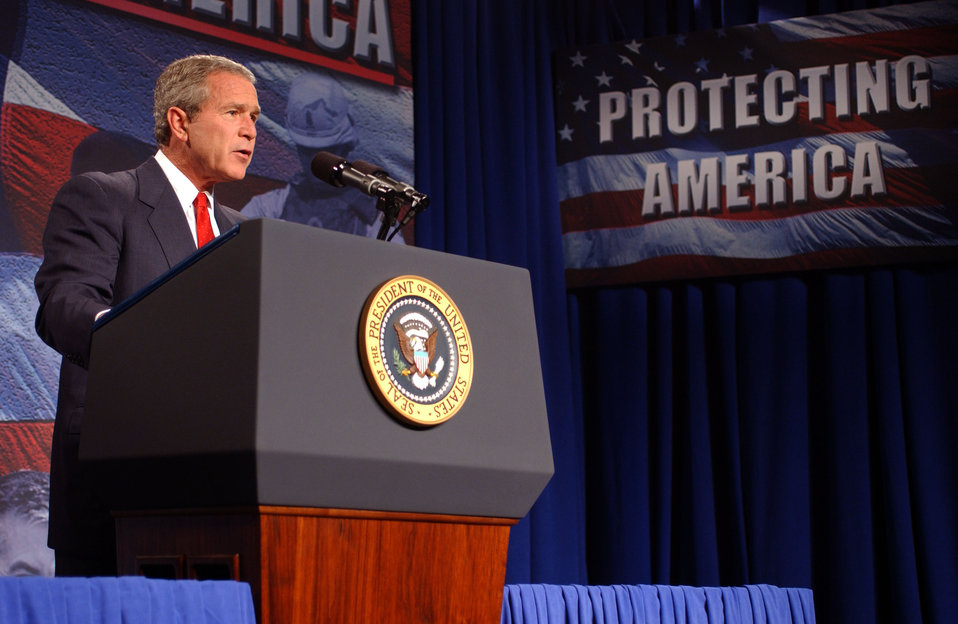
President George W. Bush visit to Oak Ridge National Lab.

04-164-171 DOE photo by Lynn Freeny

President George W. Bush visit to Oak Ridge National Lab. Oak Ridge Tennessee 7-12-2004